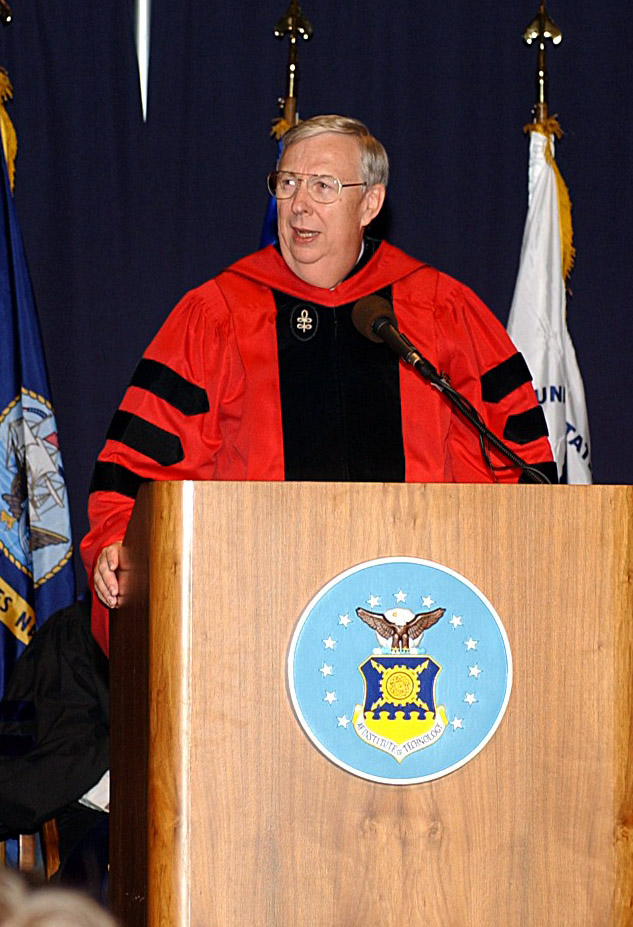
Enlisted graduate AFIT

DAYTON, Ohio -- Secretary of the Air Force Dr. James G. Roche addresses the Air Force Institute of Technology graduating Class of 2004 March 23 at the Air Force Museum here.